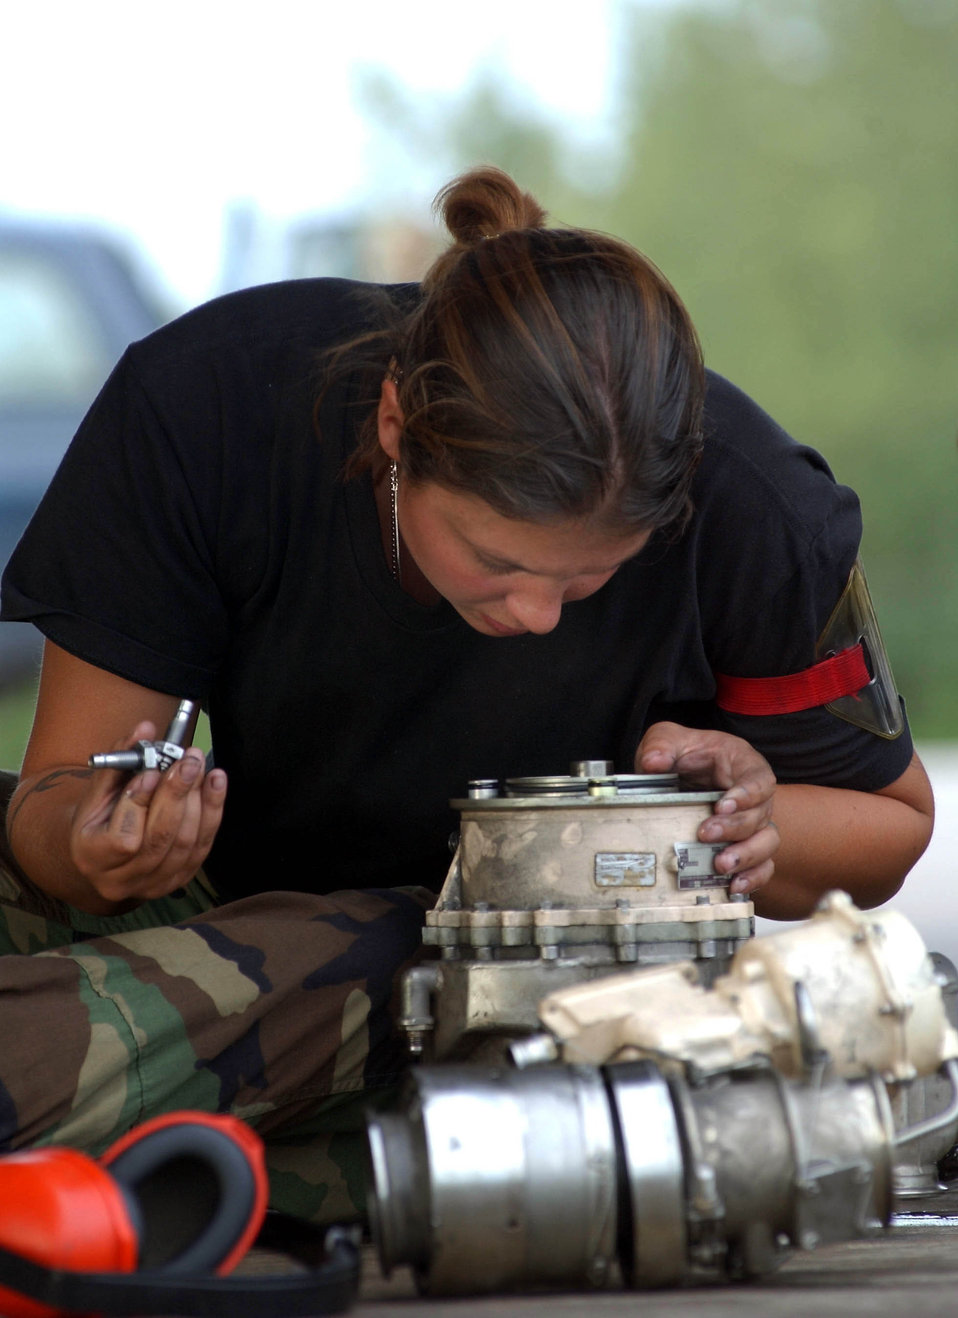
Engine maintenance

OPERATION ENDURING FREEDOM -- An Air Force engine specialist from the 28th Air Expeditionary Wing conducts routine maintenance on an air turbine starter for a B-1B Lancer in support of Operation Enduring Freedom. The B-1B is capable of exceeding speeds of more than 900 mph or Mach 1.2 at sea level.